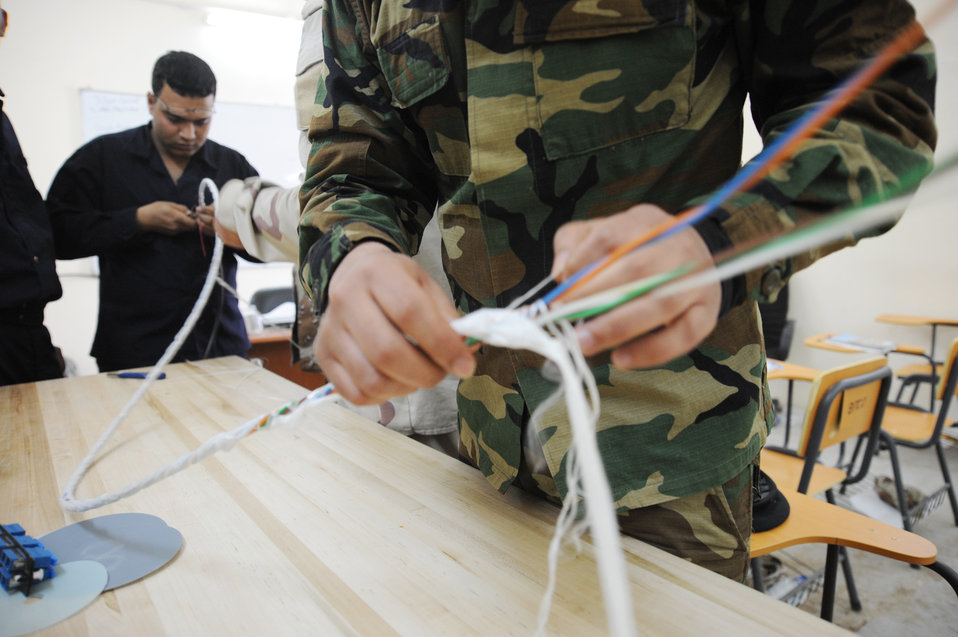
Fiber optic class

Iraqi military students participating in a cable and antenna maintenance class Feb. 13, 2010, unravel a long cable to separate what is inside. The course is being taught by Staff Sgt. Gary Graf, an 821st Expeditionary Training Squadron cable and antenna maintenance instructor at Camp Taji, Iraq. During the 42-day course, Iraqi military students learn about theories, splicing cable and the improved capabilities that fiber optics can bring. Sergeant Graf is deployed to the 821st ETS from Sheppard Air Force Base, Texas.